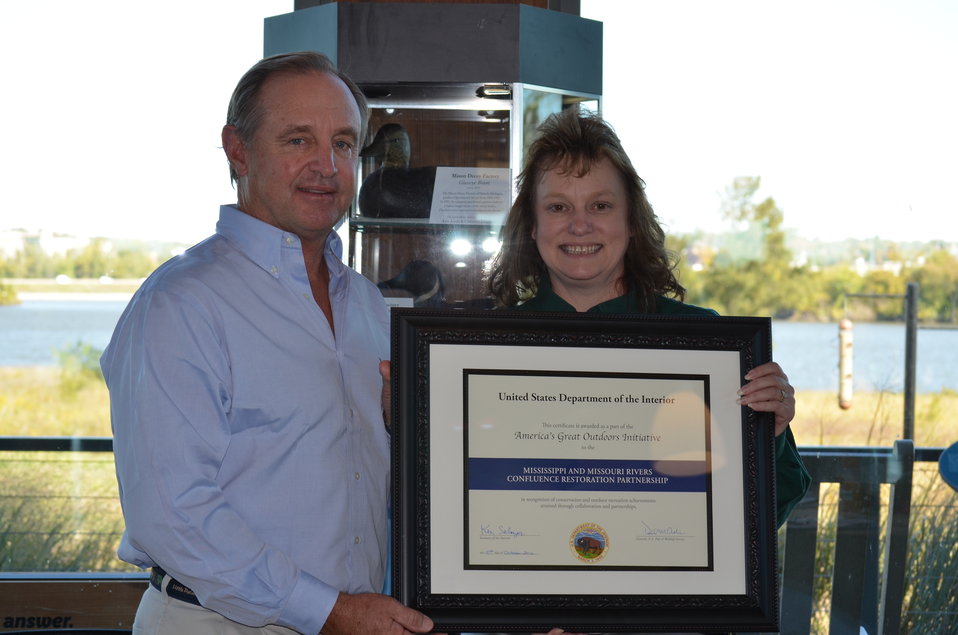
Adolphus Busch honored

President of Great Rivers Habitat Alliance Adolphus Busch presented award on behalf of Department of Interior. As founder and chairman of the Great Rivers Habitat Alliance in St. Louis, Busch has been a pioneer in preserving floodplain habitats and riverways along the Mississippi and Missouri Rivers. Under his leadership, the alliance has educated public and policy makers about the hazards of developing floodplains, emphasizing their importance as natural water storage areas, wildlife habitat and productive farmland. USFWS/Ashley Spratt